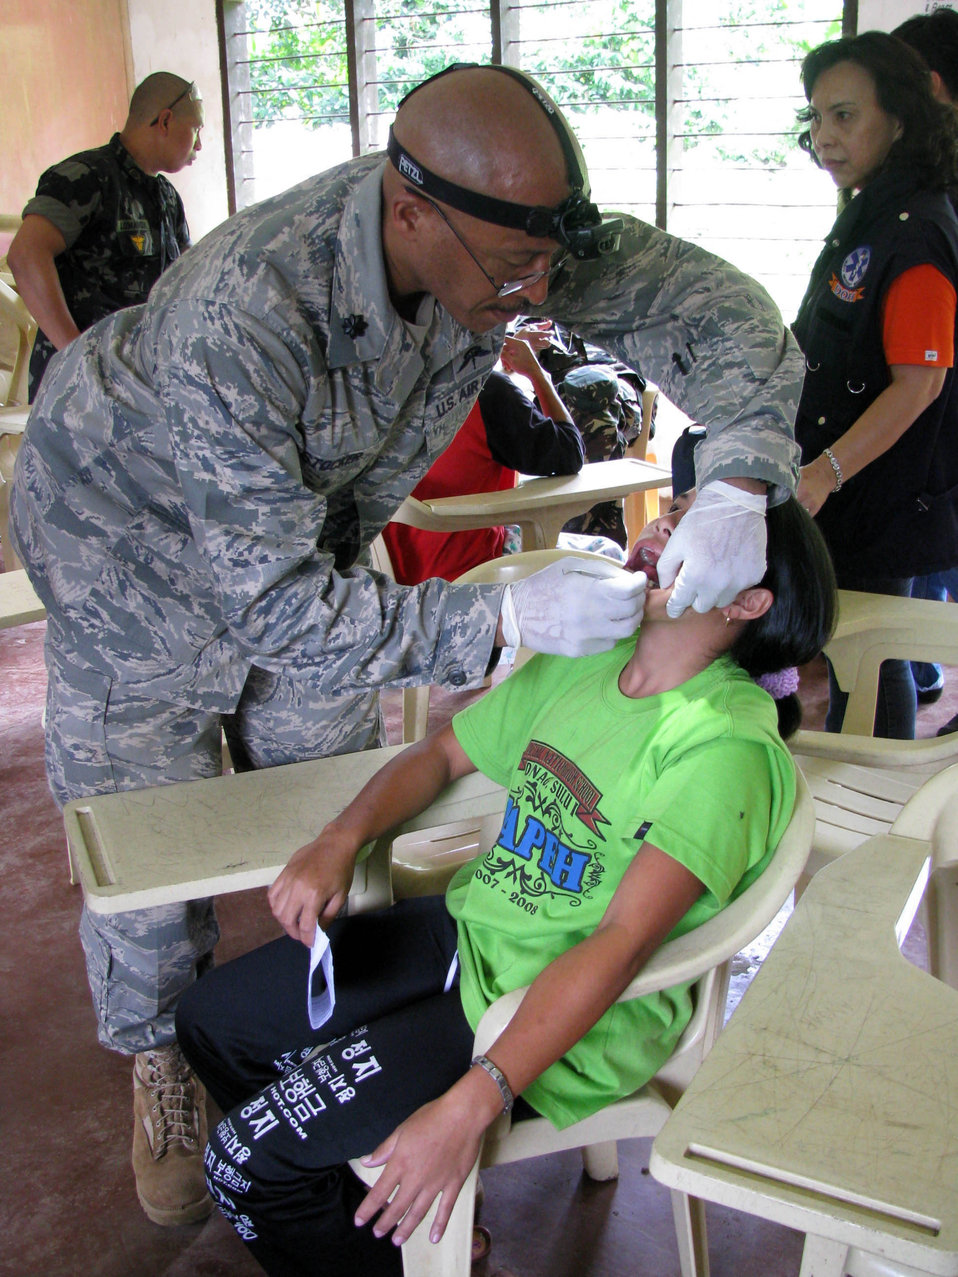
American servicemembers help restore shrine, provide medical care in Philippines

Lt. Col. Arnold Stocker extracts a tooth from a young girl during a Medical Civic Action Project Nov. 28, 2009, in Jolo, Philippines. Colonel Stocker is a nurse anesthetist assigned to Joint Special Operations Task Force-Philippines.